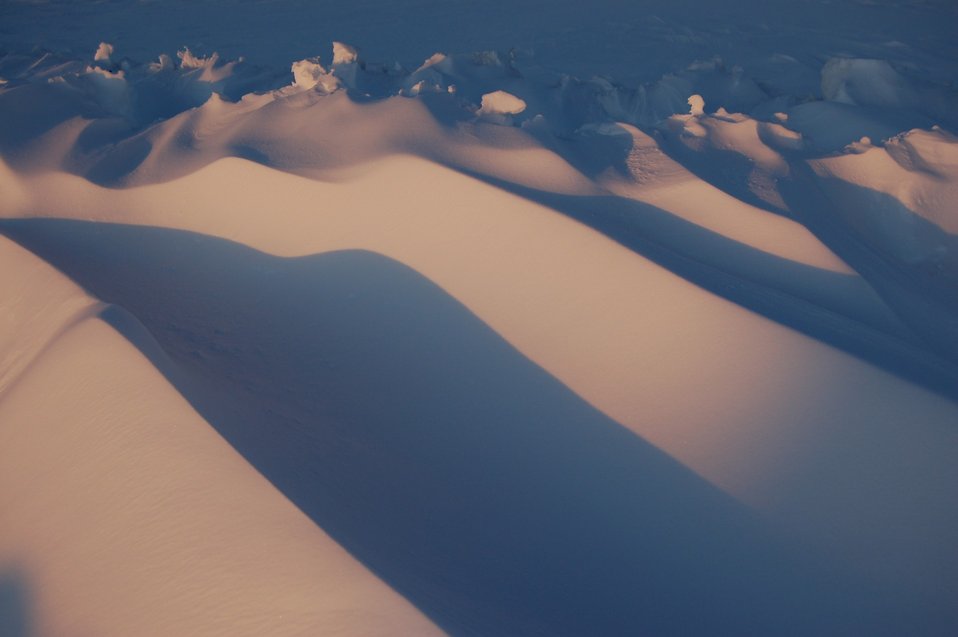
Magical mountains

Mystical world appears as the sun sets on piles of snow.